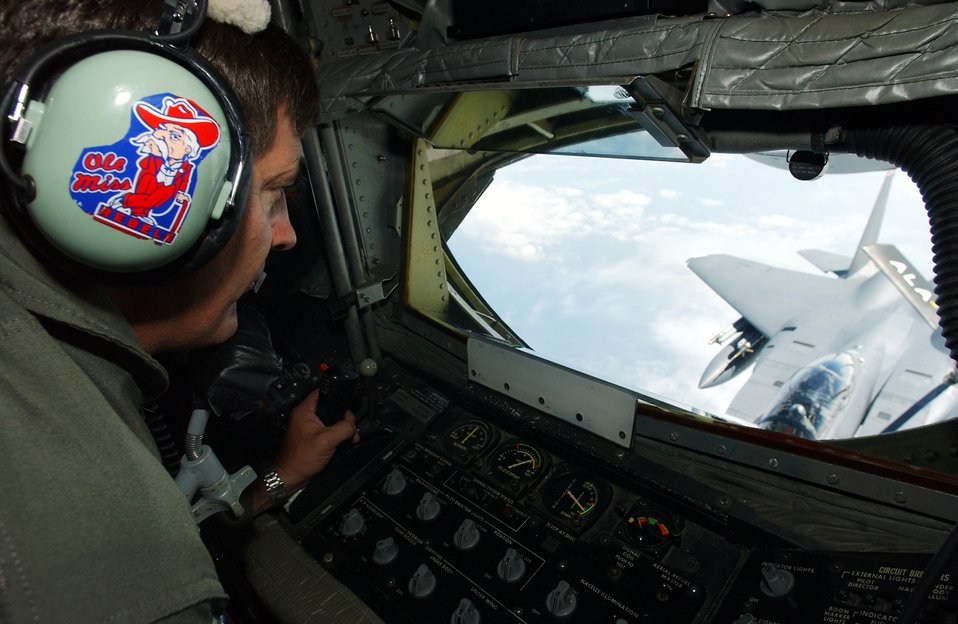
Fueling the Eagle

OVER THE NORTH SEA -- Master Sgt. Tony Boykin refuels an F-15E Strike Eagle during a training mission here July 19. Sergeant Boykin is a boom operator from the Birmingham Air National Guard's 106th Air Refueling Squadron and the F-15 is assigned to the 494th Fighter Squadron at Royal Air Force Lakenheath, England.